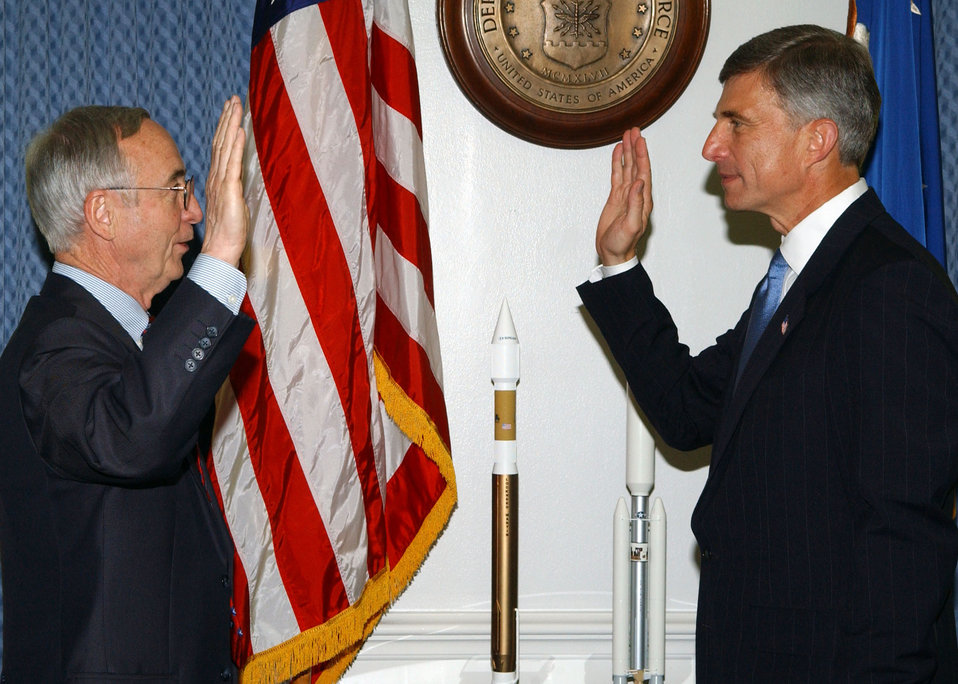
Sega sworn in as undersecretary

WASHINGTON -- Dr. Ronald M. Sega, right, is sworn in as the new undersecretary of the Air Force by Gordon England, acting deputy secretary of defense, Aug. 4. Dr. Sega served in the Air Force as a fighter pilot and has more than 4,000 flying hours. He was also a NASA astronaut and served as a mission specialist on two space shuttle flights.